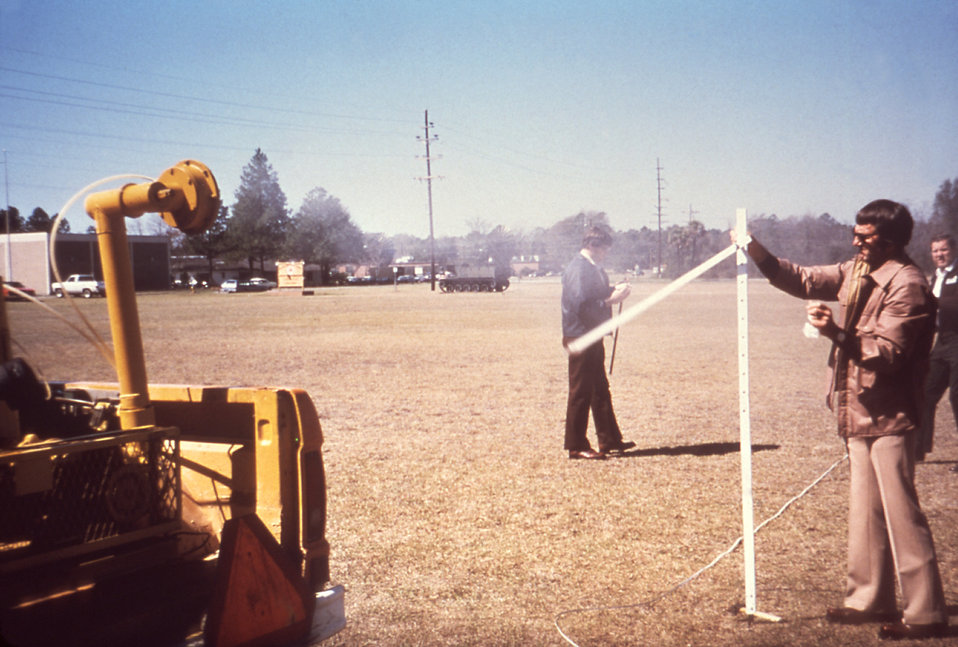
This 1981 photograph depicted a number of arboviral field technicians, one of whom is collecting airborne insecticide droplets, which are being dispersed from a truck-mounted ultra low volume (ULV) fogger, using the 'hand-wave' method of collection.